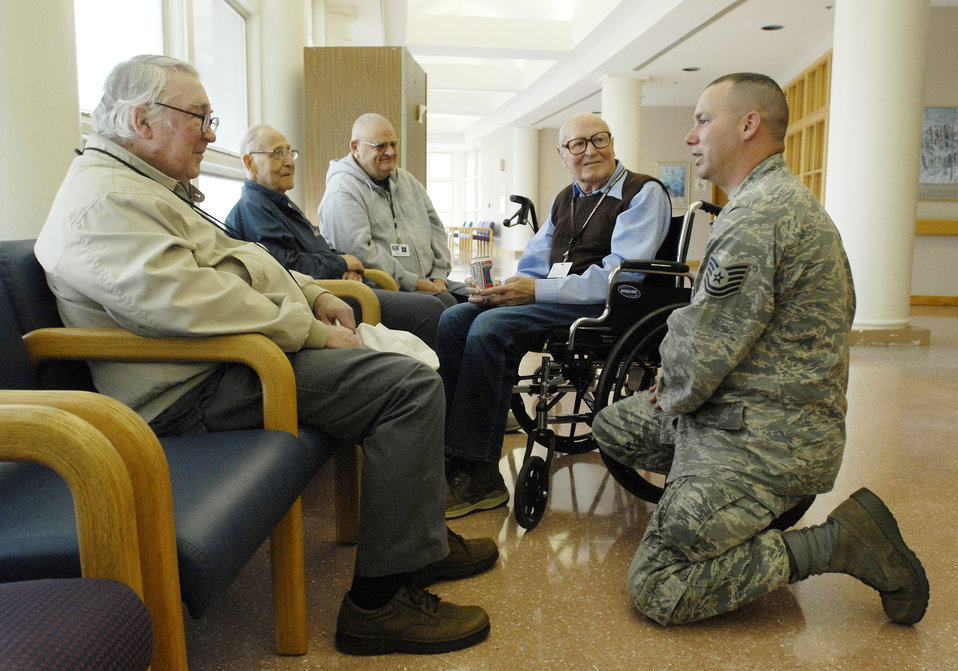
Joint Enlisted Council lift spirits at veterans home

Tech. Sgt. Chris Orbits chats with residents Oct. 16, 2009, during a visit to the U.S. Soldier's and Airmen's Home in Washington, D.C. Sergeant Orbits made the visit with the National Capital Region Joint Enlisted Council.